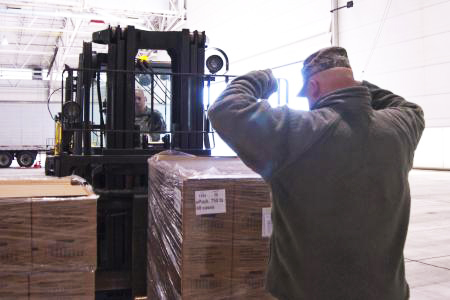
Hauling for a cause

Staff Sgt. Joshua Wishmyer signals to his brother Staff Sgt. John Wishmyer as he moves a pallet of boxed meals at the West Virginia Air National Guard’s 167th Airlift Wing based in Martinsburg W.Va., Nov. 1, 2012. The 167th is serving as a staging area for disaster relief supplies which will then be transported throughout West Virginia as needed.